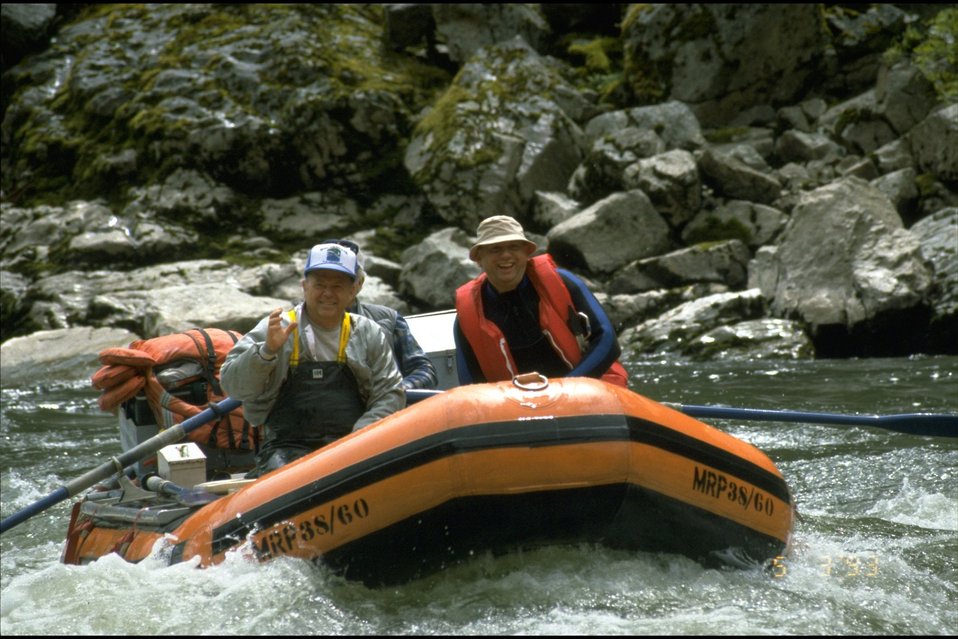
Rogue River - Wild section. BLM/FS/Outfitters "Partners Afloat" Trip. Gerry Briggs (front left passenger) and Urv Urie (barsman).